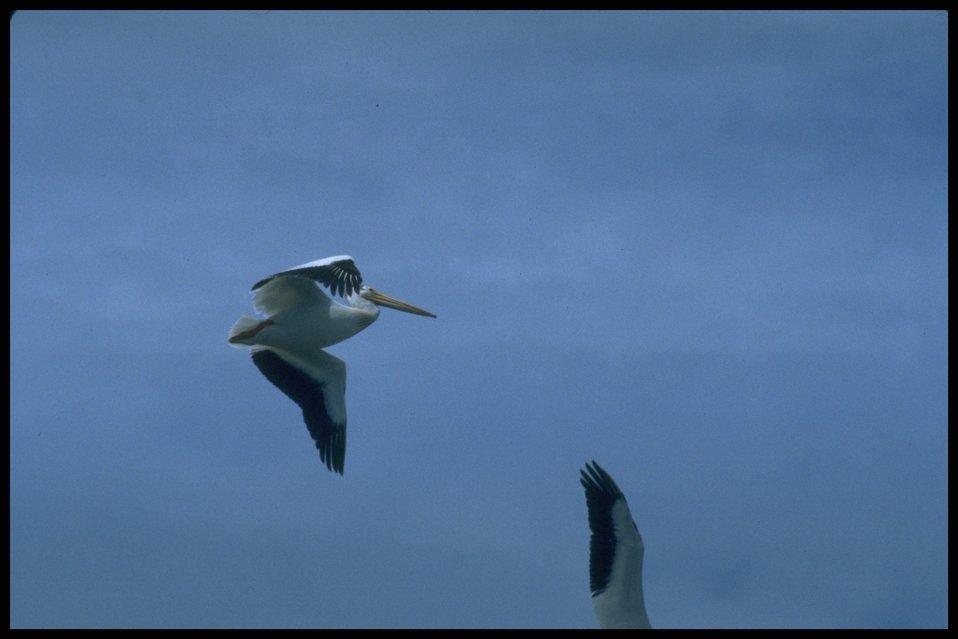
Pelicans in flight, Lakeview District.